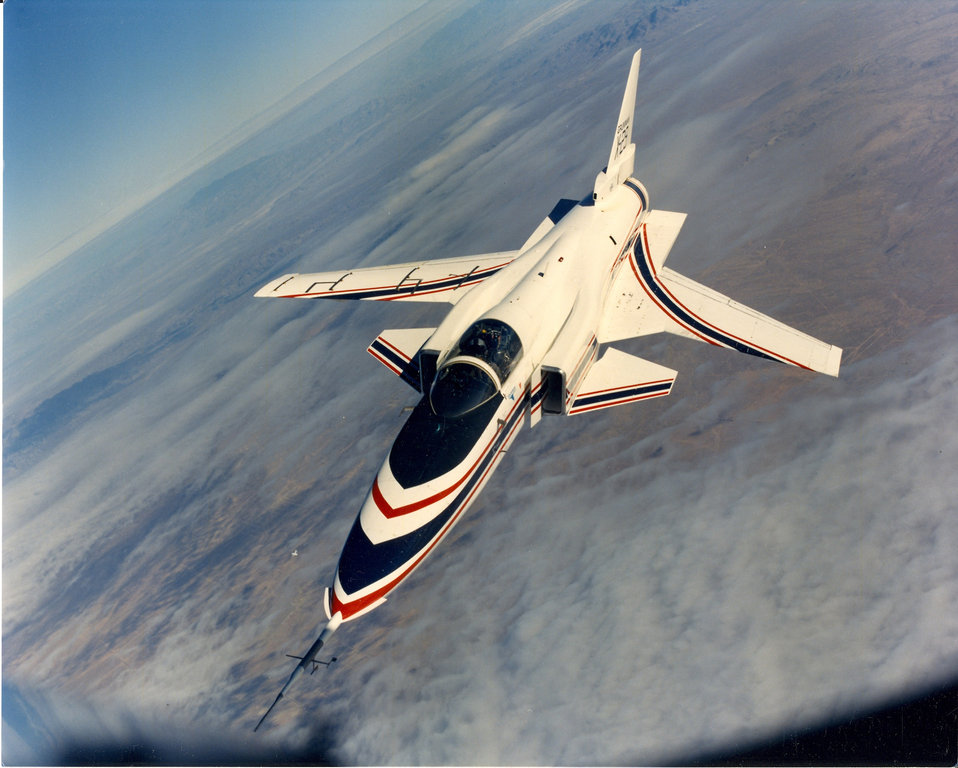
X-29

The X-29 in flight.